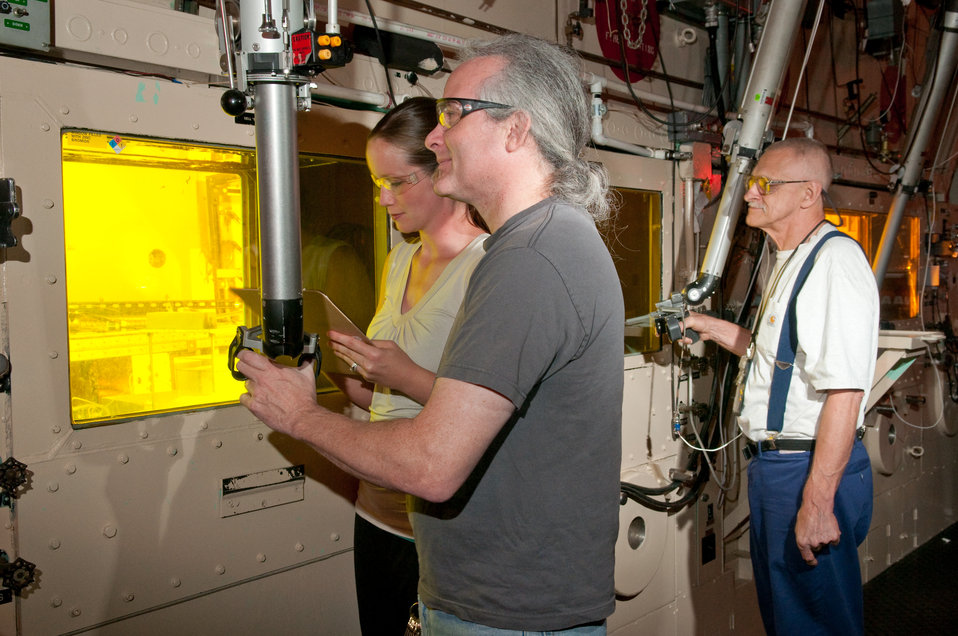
Argonne Forges Ahead in Waste Removal, Facility Demolitions with Recovery Act Help

With the help of $79 million from the Recovery Act, Argonne National Laboratory continues to dramatically reduce its inventory of radioactive materials and waste while making significant progress in its decontamination and demolition (D&D) program.